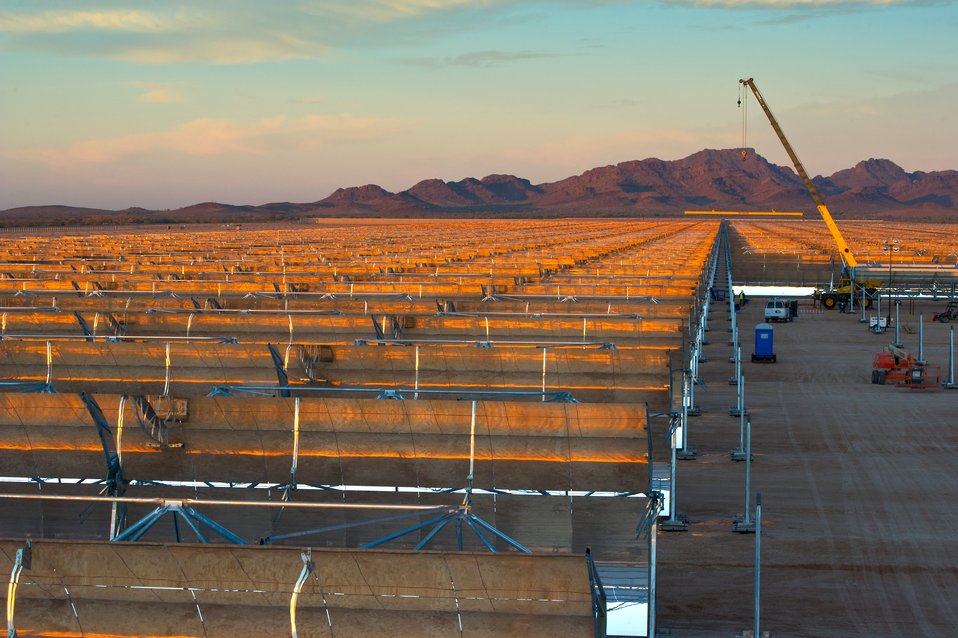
Abengoa Solar

Crews work around the clock installing mirrored parabolic trough collectors, built on a site that will cover 3 square miles at Abengoa's Solana Plant in Gila Bend, Arizona. When finished, the Solana Plant will generate 280 MWs of clean, sustainable power - serving over 70,000 Arizona homes.